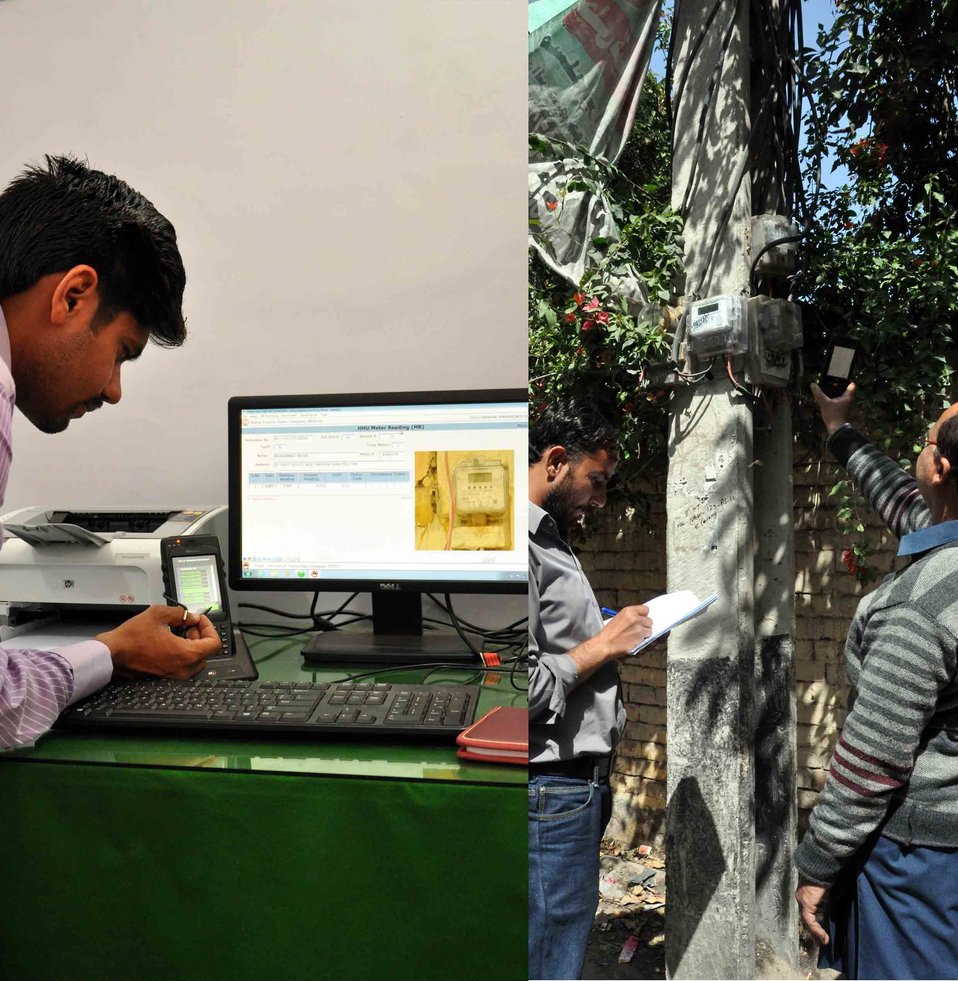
Multan Electric Power Company Handheld Units Project

TRANSPARENCY
“USAID has supported MEPCO to implement meter reading through handheld units (HHU). MEPCO is the first DISCO to shift the entire Multan Circle meter reading using HHU. MEPCO has procured 130 HHUs to expand this intervention with the technical assistance of USAID. This has helped to improve the billing data integrity and reduce billing cycle. Customer complaints regarding wrong and over billing have reduced to almost zero.”
Multan Electric Power Company, Commercial Services Director
Zia Ur Rehman

(Pictured Above) Multan Electric Power Company Handheld Units Project: After its pilot implementation in Multan Electric Power Company’s (MEPCO) Gulgasht subdivision, MEPCO in expanding this intervention to the circle level. Work has already begun in four subdivisions of Multan. Meter reading departments of the subdivision have been renovated to accommodate computers and handheld units (HHUs). Trainings have been provided to the subdivision staff on the new meter reading process. The HHU intervention increases the efficiency of meter readers as it allows for easier readings and less easy to manipulate, eradicating complaint-ridden consumers altogether after they are billed the power they actually consumed.